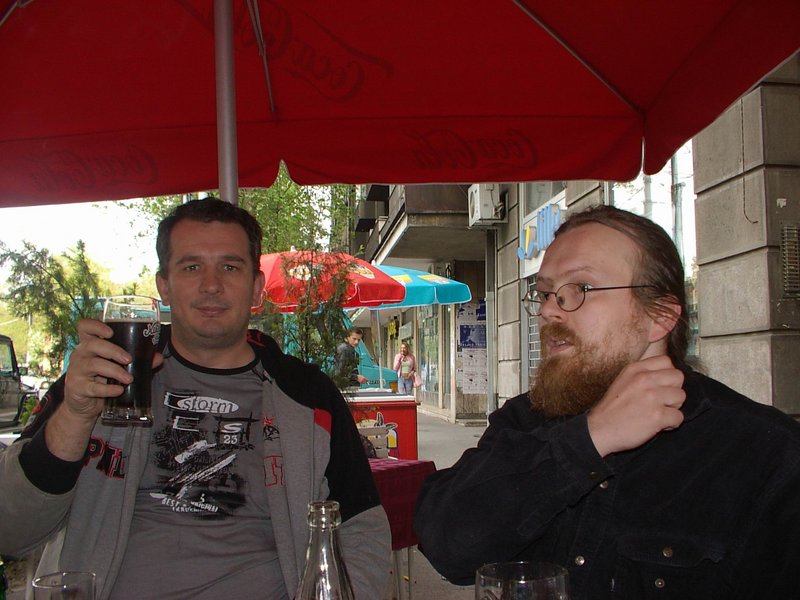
U Domovini 3